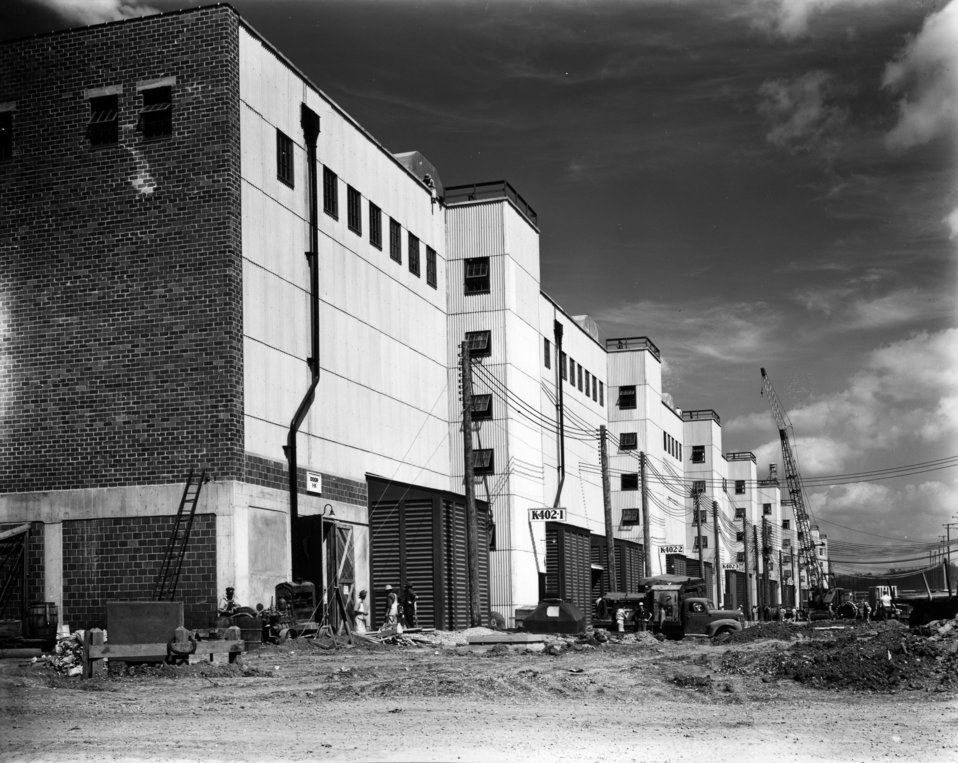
K-27 at Oak Ridge